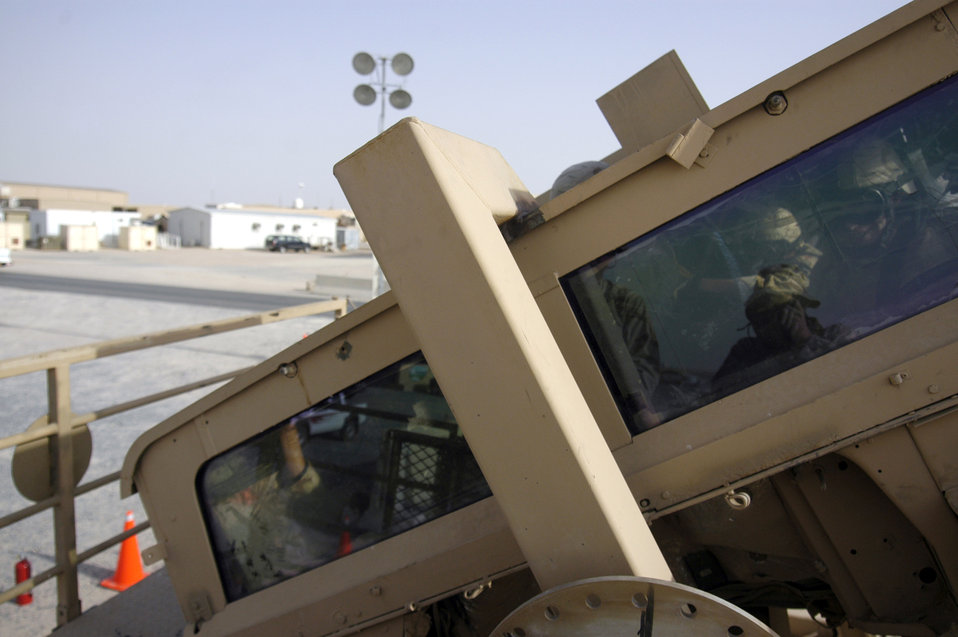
Security forces members battle HEAT

Airmen from the 386th Expeditionary Security Forces Squadron take their turn in the Humvee egress assistance trainer on July 17 at a forward operating base in Southwest Asia. The trainer, suspended six feet off the ground on a flatbed trailer, aids military members with instruction on how to escape from a Humvee that has rolled over and how to avoid such accidents.